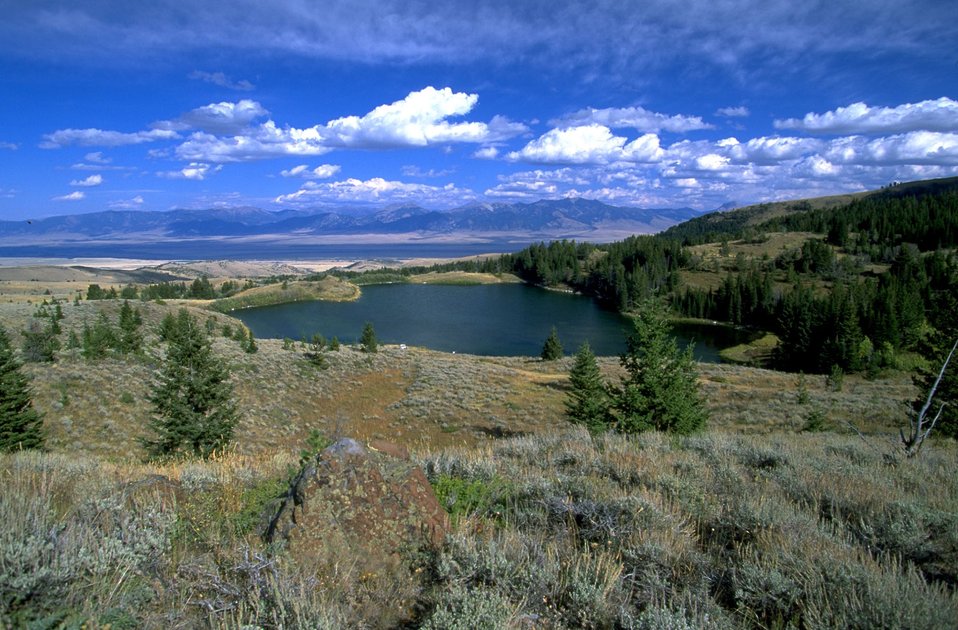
Twin Lakes